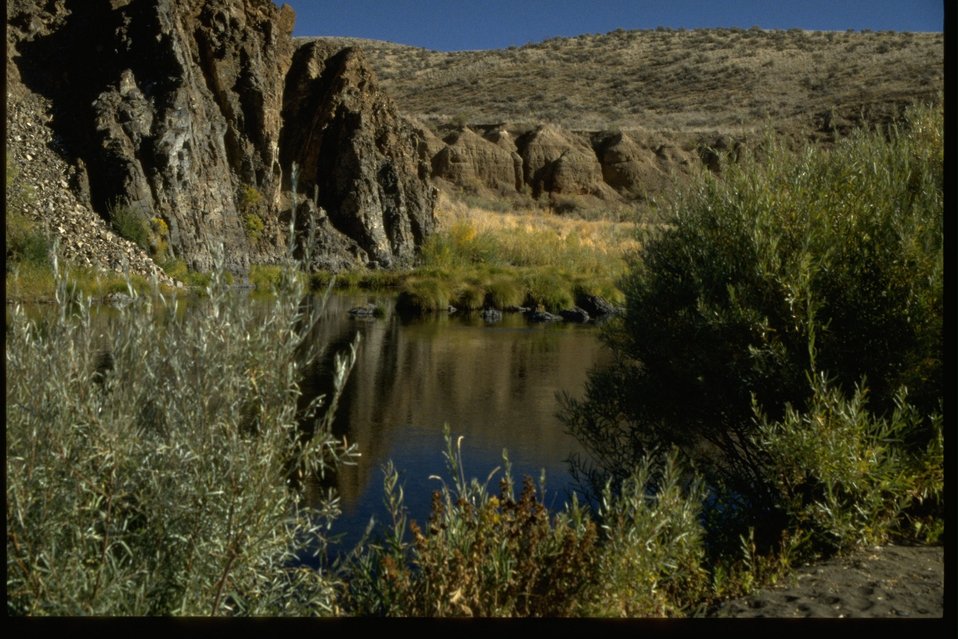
Riparian vegetation along the bank of the John Day River, near Bridge Creek.